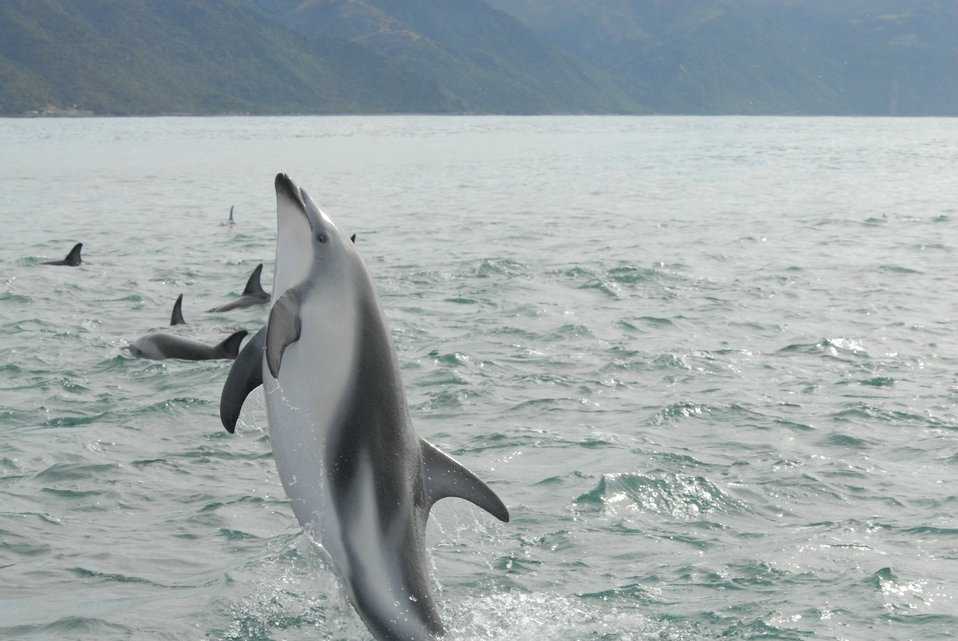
Dusky dolphin (Lagenorhynchus obscurus)